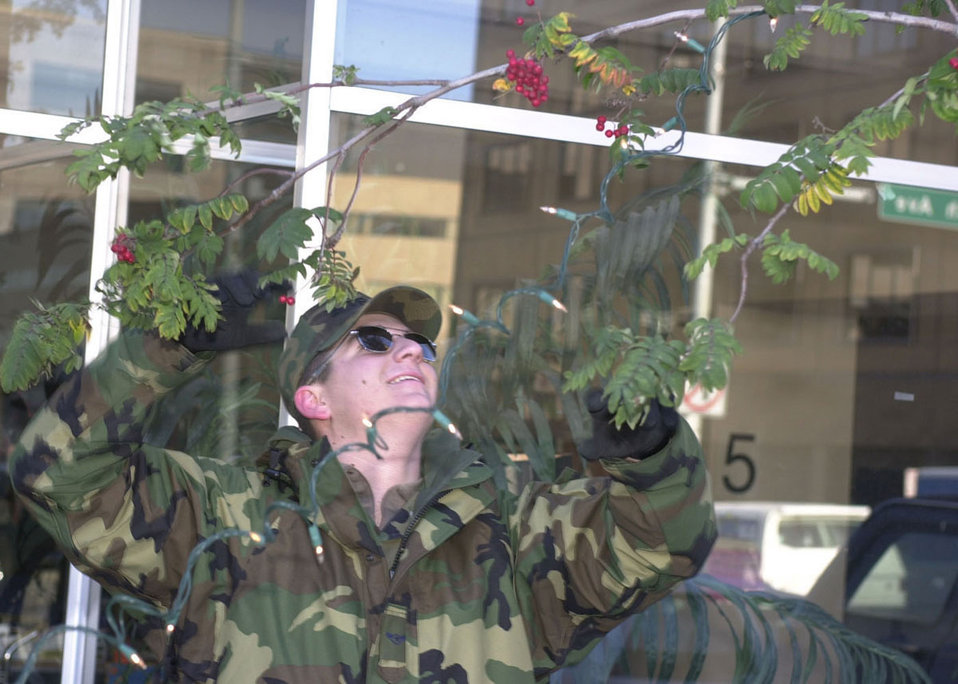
City of Lights

ELMENDORF AIR FORCE BASE, Alaska -- Airman 1st Class Josh Leuck, from the 3rd Transportation Squadron, strings lights in downtown Anchorage as part of the